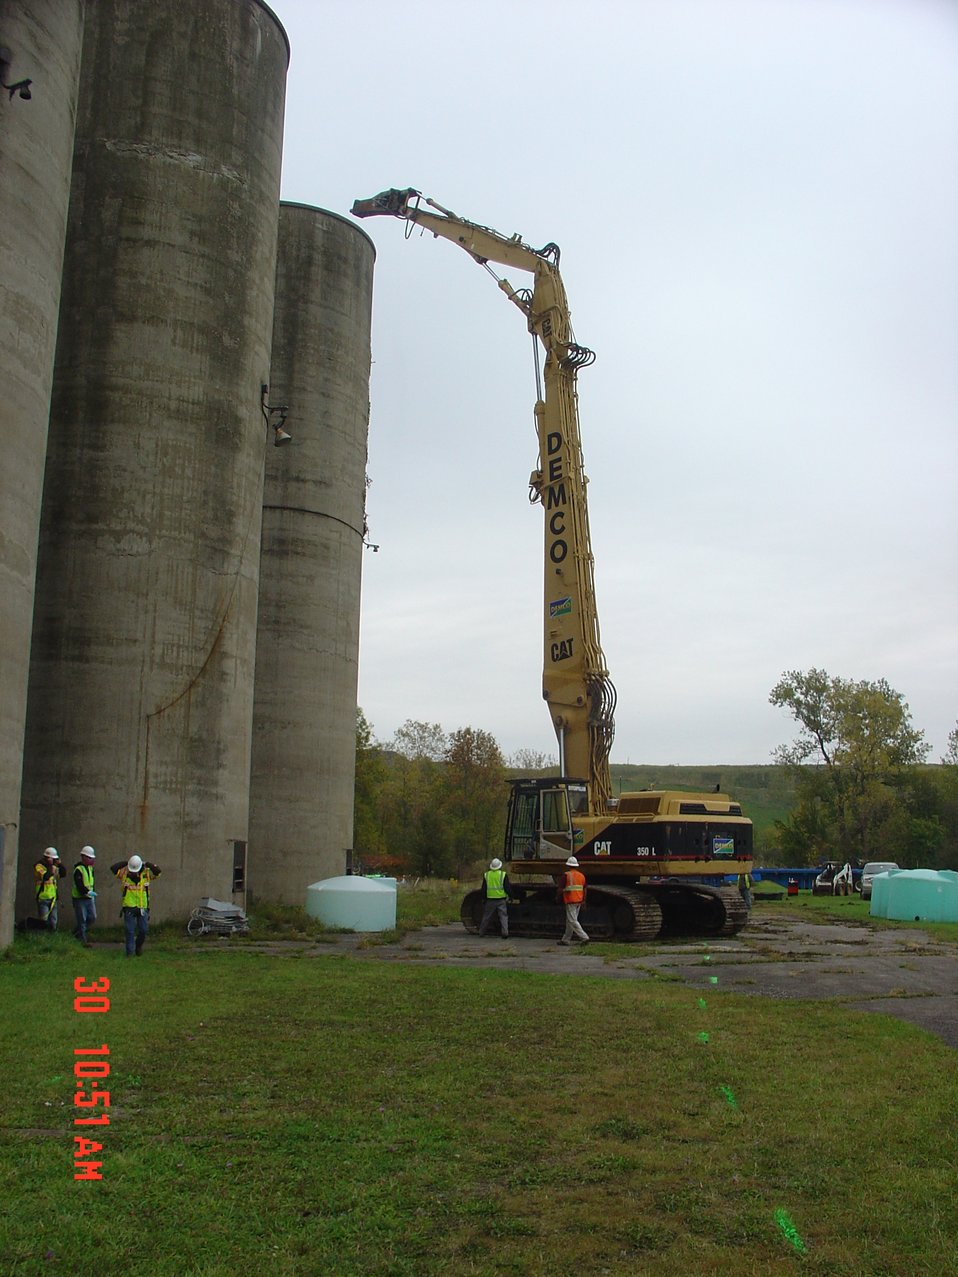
BLDG 401 SILO DEMO BEGINS

Activities from the Niagara Falls Storage Site, which is associated with the former Lake Ontario Ordnance Works. Formerly Utilized Sites Remedial Action Program (FUSRAP), a program initiated in 1974 to identify, investigate and clean up or control sites that were part of the Nation's early atomic energy and weapons program. Activities at the sites that are eligible for FUSRAP were conducted by Manhattan Engineer District (MED) or the Atomic Energy Commission (AEC), both predecessors of the Department of Energy (DOE). The U.S. Army Corps of Engineers was assigned management of FUSRAP by Congress in 1997.